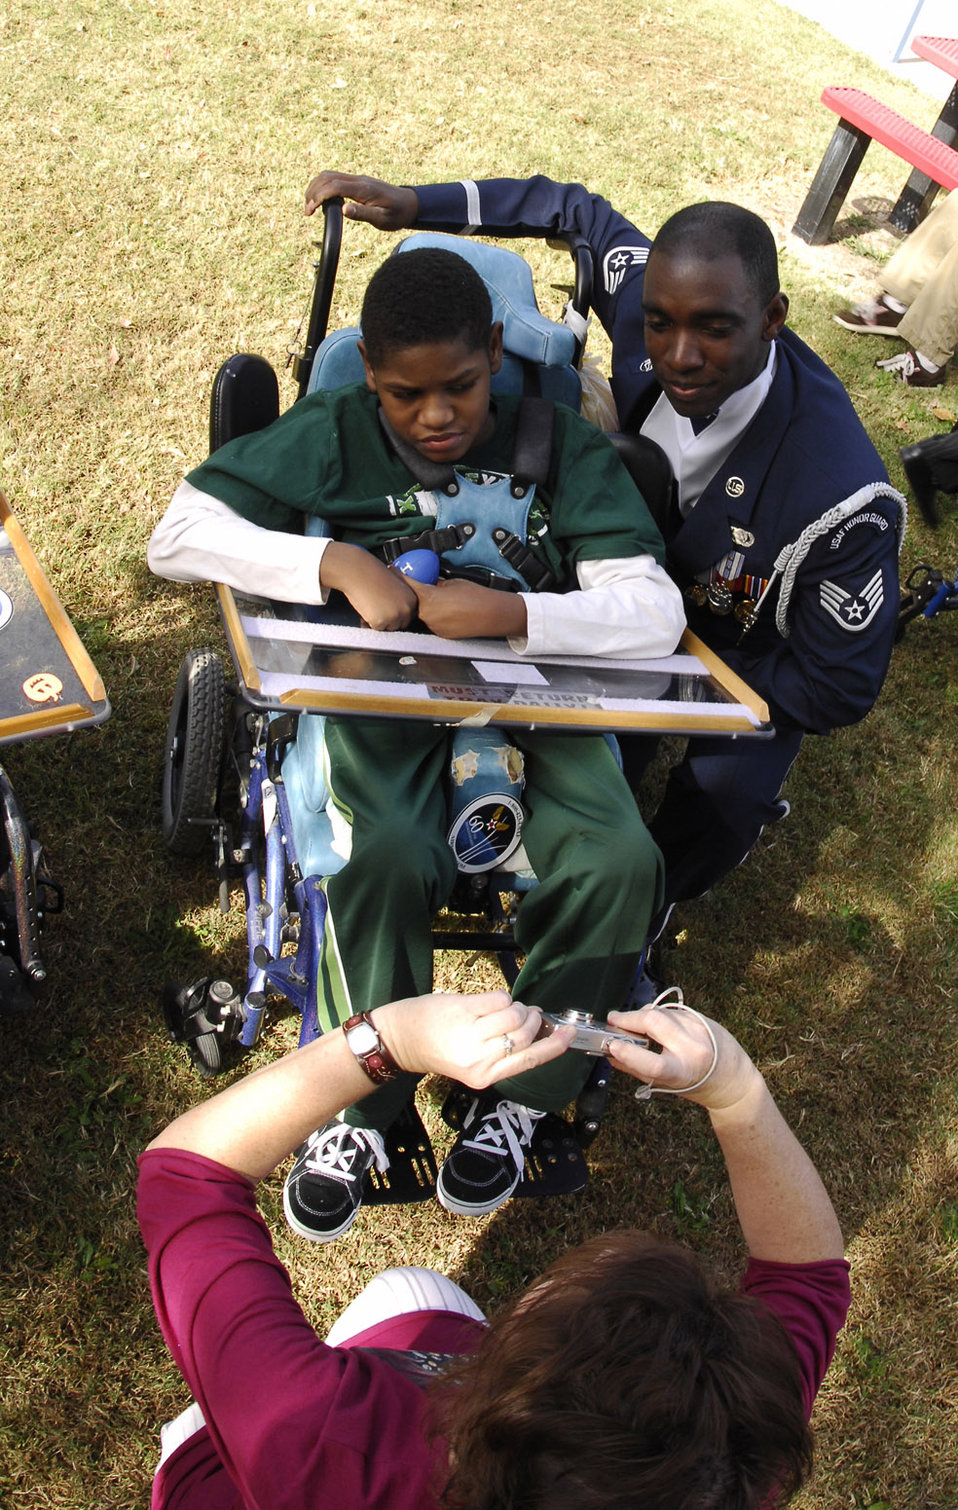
Honor Guard drill team performs for special-needs students

Staff Sgt. Taurean Lennon poses for a picture with a student at the John F. Miller School for Special Needs Nov. 8 in Las Vegas. Sergeant Lennon is the Air Force Honor Guard drill team operations NCO in charge. The drill team planned a special performance for the students at the school during their visit to the city and Nellis Air Force Base, Nev., for the final week of the Air Force's 60th Anniversary celebrations.